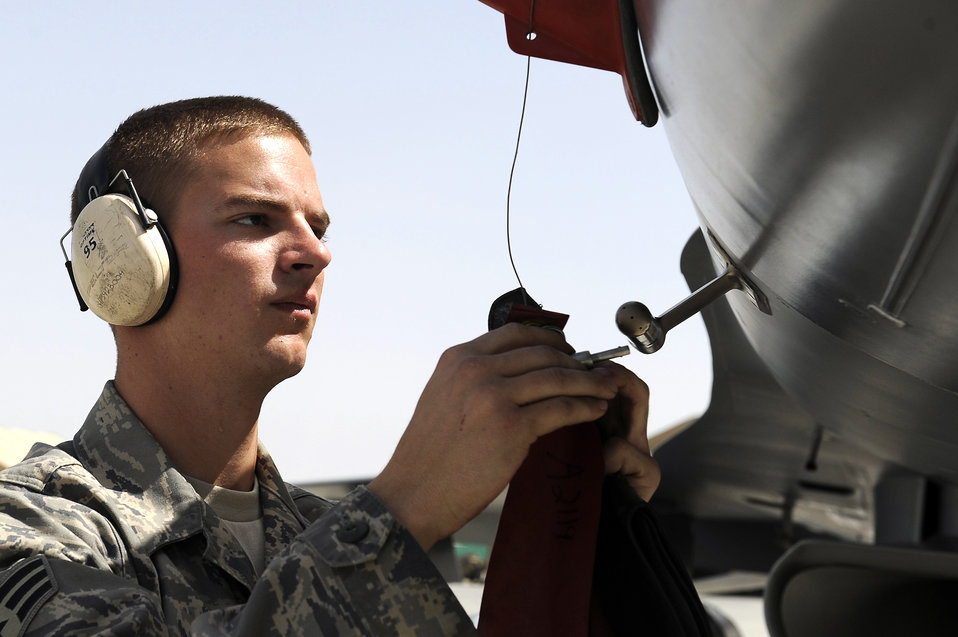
30 Code 1 flights

Senior Airman Anthony Creasey, a maintainer from the 34th Expeditionary Fighter Squadron at Bagram Airfield, Afghanistan, recovers this F-16 Fighting Falcon March 23, 2010, after it completed its 30th code 1 flight, meaning no maintenance write-ups for 30 flights in a row. Airman Creasey is deployed from Hill Air Force Base, Utah.